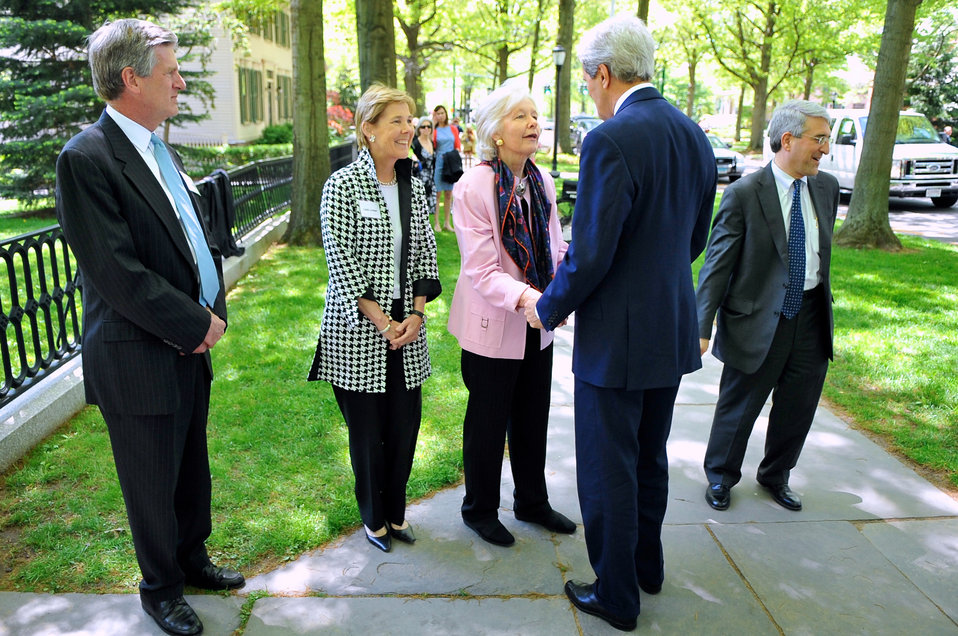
Former Massachusetts Justice Marshall at Yale University Greets Secretary Kerry

U.S. Secretary of State John Kerry is greeted by Margaret Marshall, formerly the Chief Justice of the Massachusetts Supreme Judicial Court and now Senior Fellow of the Yale Corporation, as he arrives on campus in New Haven, Connecticut, for Class Day ceremonies on May 18, 2014.